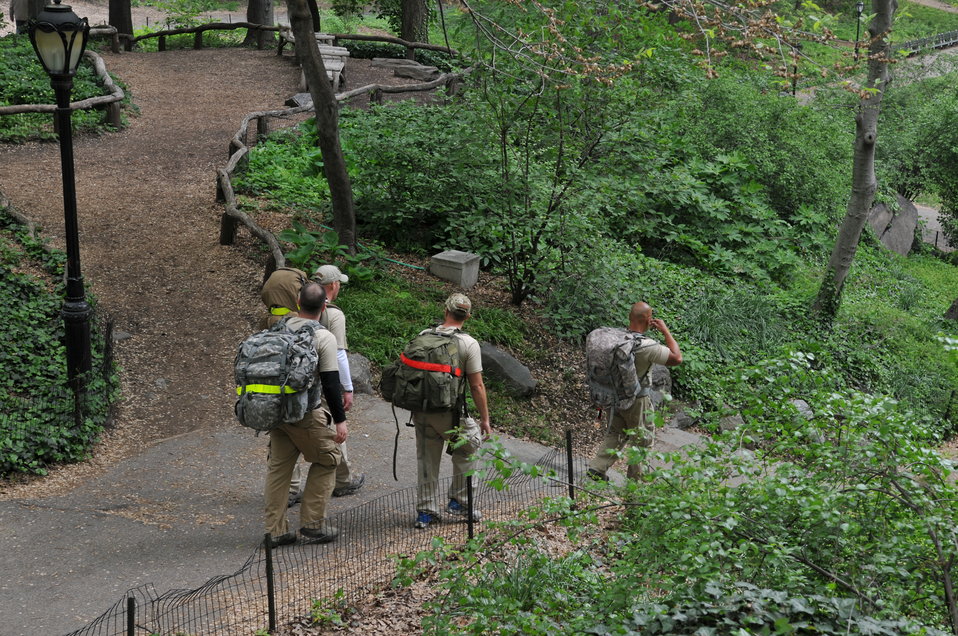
Airmen remember fallen air advisors

Several members of Team 1 make their way through Central Park in New York City during the Air Advisor Memorial Ruck March on April 26, 2012. The march, which took the Airmen approximately 90 miles from the World Trade Center to Joint Base McGuire-Dix-Lakhurst, N.J., was in remembrance of the nine air advisors who were killed April 27, 2011, in Kabul, Afghanistan.